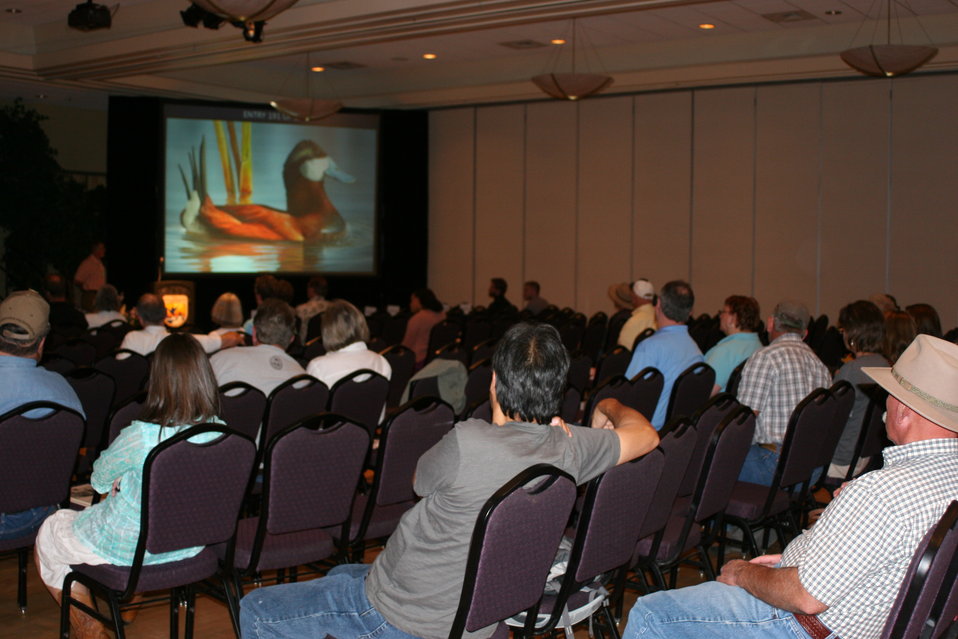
Judging

Photo Credit: Suzanne Fellows / USFWS
The U.S. Fish & Wildlife Service sponsored the 2012 Federal Duck Stamp Art Contest September 28 and 29 in Ogden, Utah, at Weber State University. A panel of five judges was responsible for choosing the art work used to design the 2013-2014 Migratory Bird Hunting and Conservation Stamp.